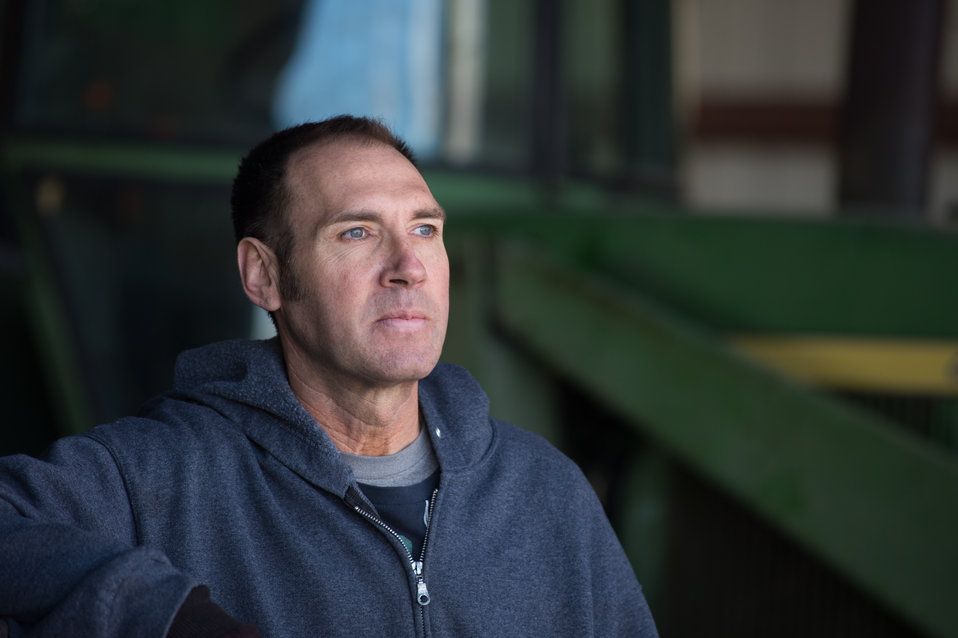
Jeff Hoff at his farmstead in Perley, MN, on Tuesday, April 30, 2013. With the assistance of the U.S. Department of Agriculture (USDA), he was able to build up and modify an earthen dike that holds back flood waters around his home, structures and and farm equipment. To learn about the USDA Red River Basin Initiative, see www.mn.nrcs.usda.gov/news/features13/RRBI.html.